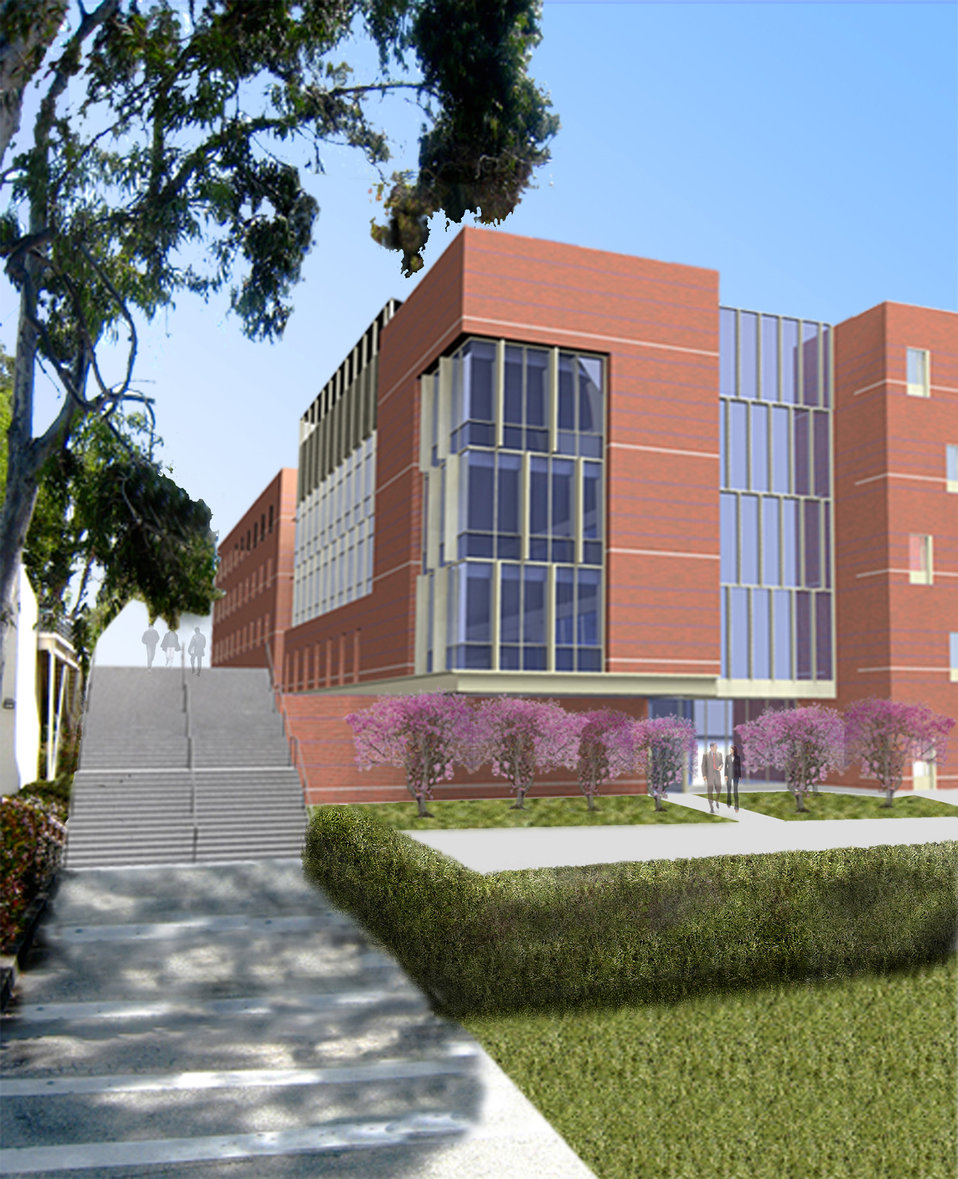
NCGP Construction Grant - Western Institute of Nanotechnology on Green Engineering and Metrology (WIN GEM)

Planned Western Institute of Nanotechnology on Green Engineering and Metrology (WIN-GEM) at the UCLA Henry Samueli School of Engineering and Applied Science.